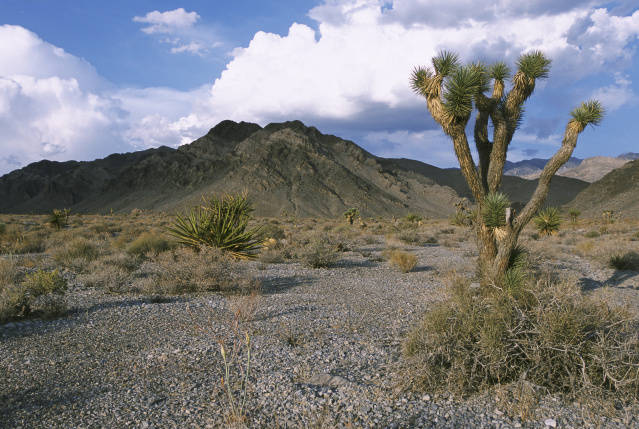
Joshua tree in the desert

Photo credit: USFWS/Ryan Hagerty

Joshua trees are projected to be virtually eliminated from most of the southern portions of its current range by the end of the century, including Joshua Tree National Park